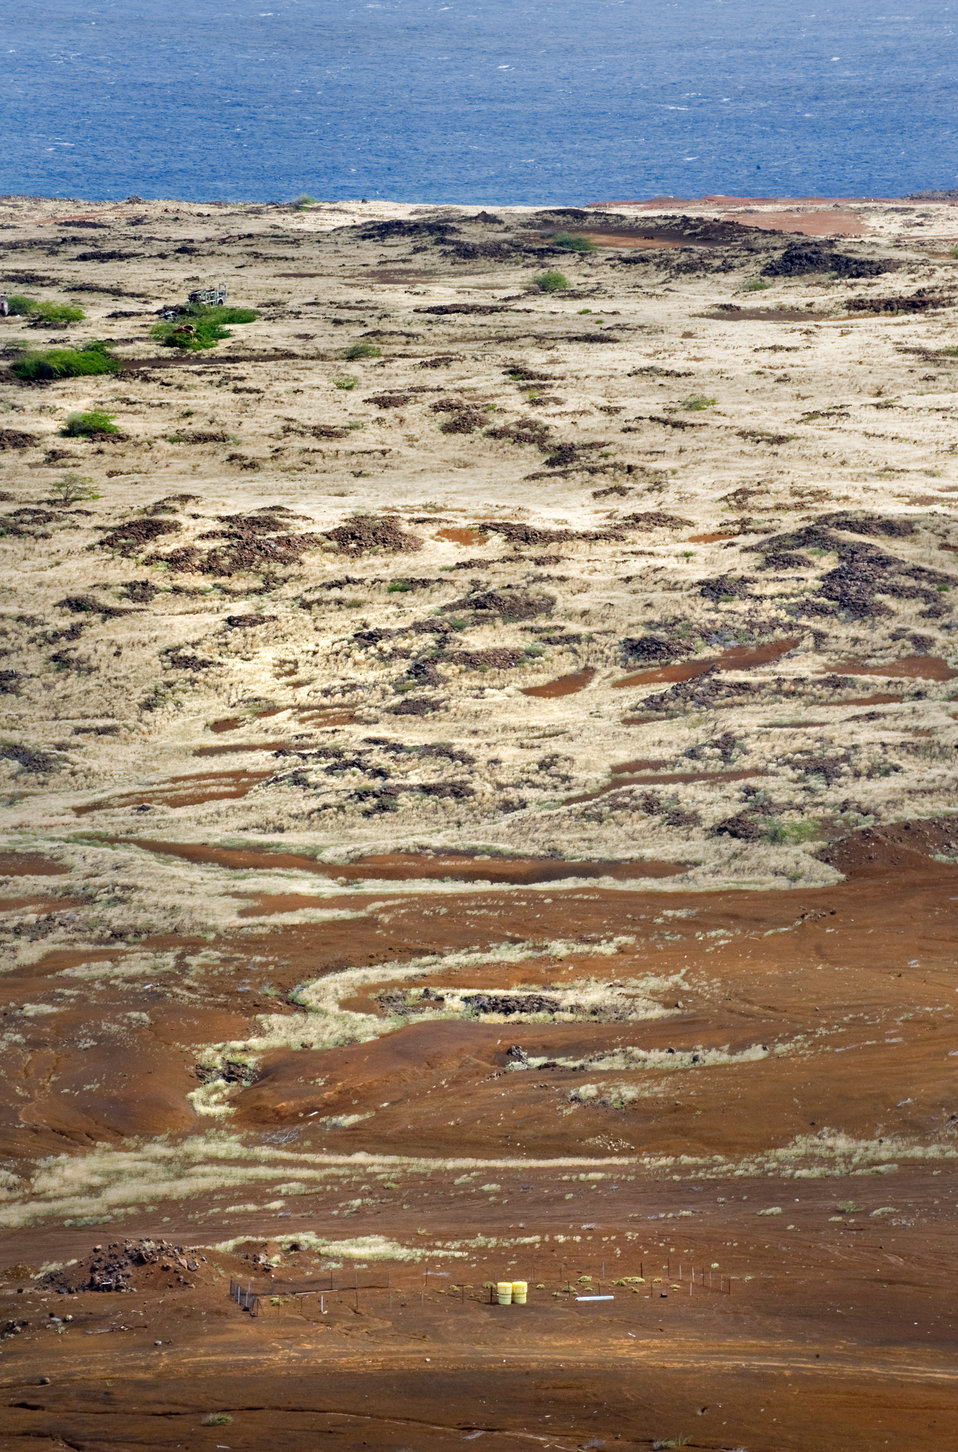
Robert's Plants

This spurge farm, a small plot of land with a chicken wire fence and a couple yellow plastic barrels of water for its crop of Ascension Spurge (E. origanoides) are located in a nearly barren field. Ongoing studies by the Computer Sciences Raytheon contract environmental engineering associates have taught them that this endemic plant survives best in these austere locations. This endangered species of plant found only on the Ascension Island, predominantly on the property used by the 45th Operations Group, Detachment 2, Ascension Auxiliary Airfield (AAF), in the South Atlantic Ocean. The environmental engineers and the local British conservation organization work together to promote its growth and to harvest seeds for a seed bank in England just incase survival conditions on the island drastically change.